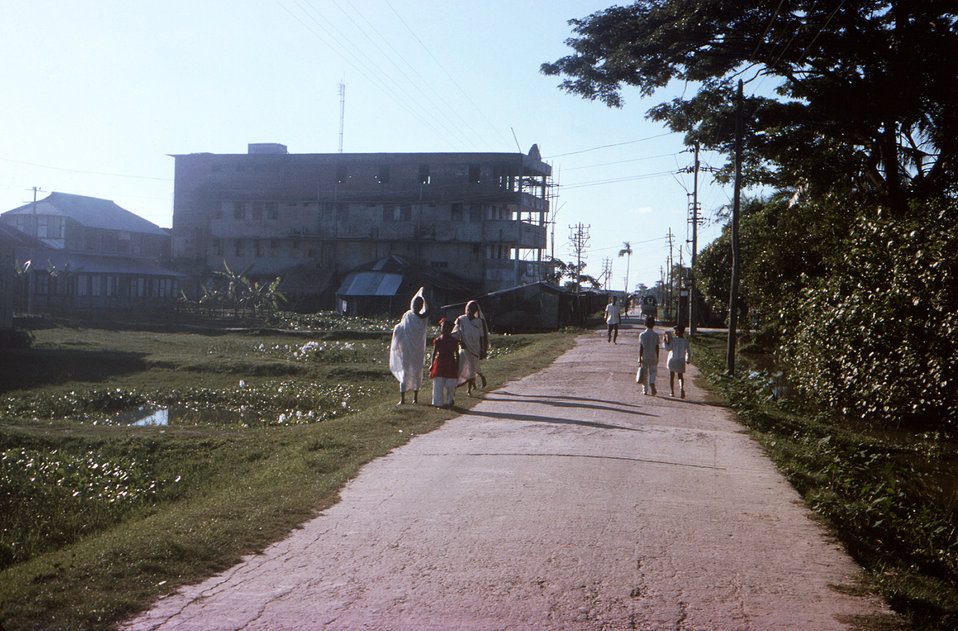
This October, 1975 photograph depicted the Hotel Bonanee, which was located on the outskirts of Patuakhali Town, in the Patuakhali District of Bangladesh. During the 1970s smallpox eradication efforts, this hotel became the local Smallpox Office and Residence.